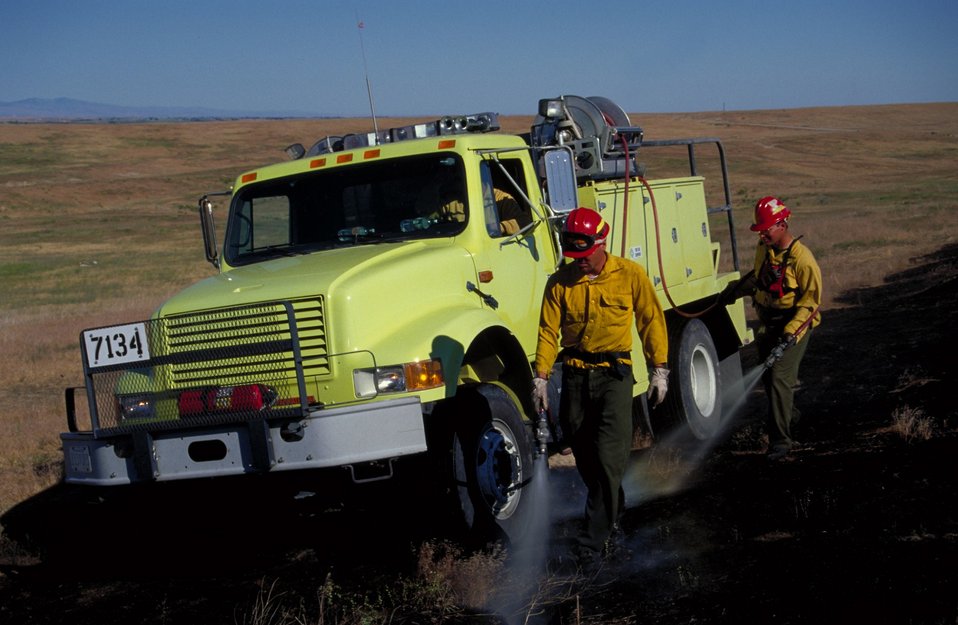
Prescribed burn Fire Season 2000 Lower Snake River District LSRD